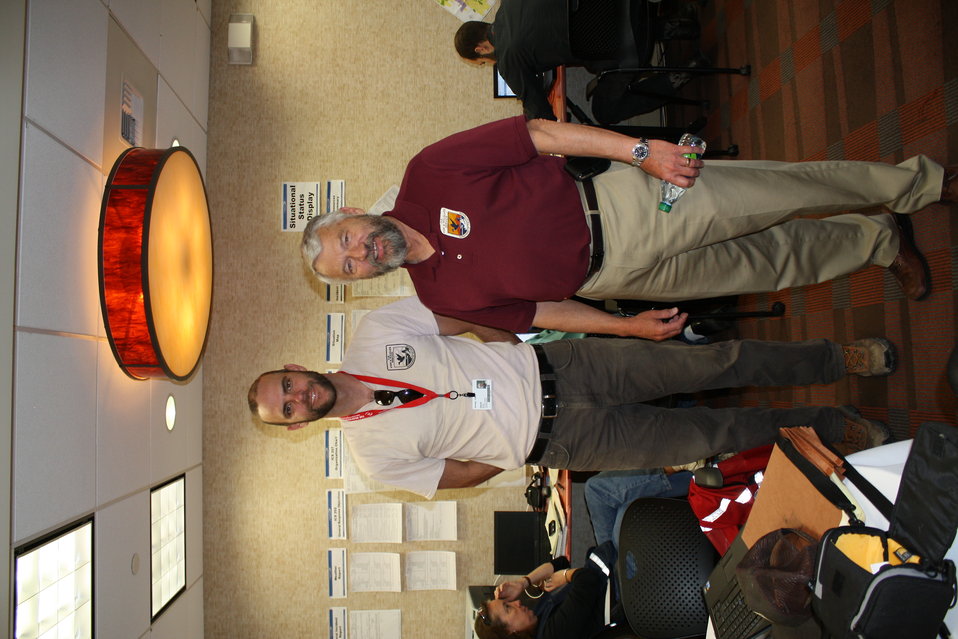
Service's Deputy Director Tours Incident Command Post

Contaminants Specialist and oil spill responder, David Rouse, poses for a photo with U.S. Fish and Wildlife Service Deputy Director, Rowan Gould, during a tour of the Silvertip Pipeline OIl Spill Command Post in Billings, Montana. Gould visited the incident to obtain a better understanding of Service members' efforts on the ground.